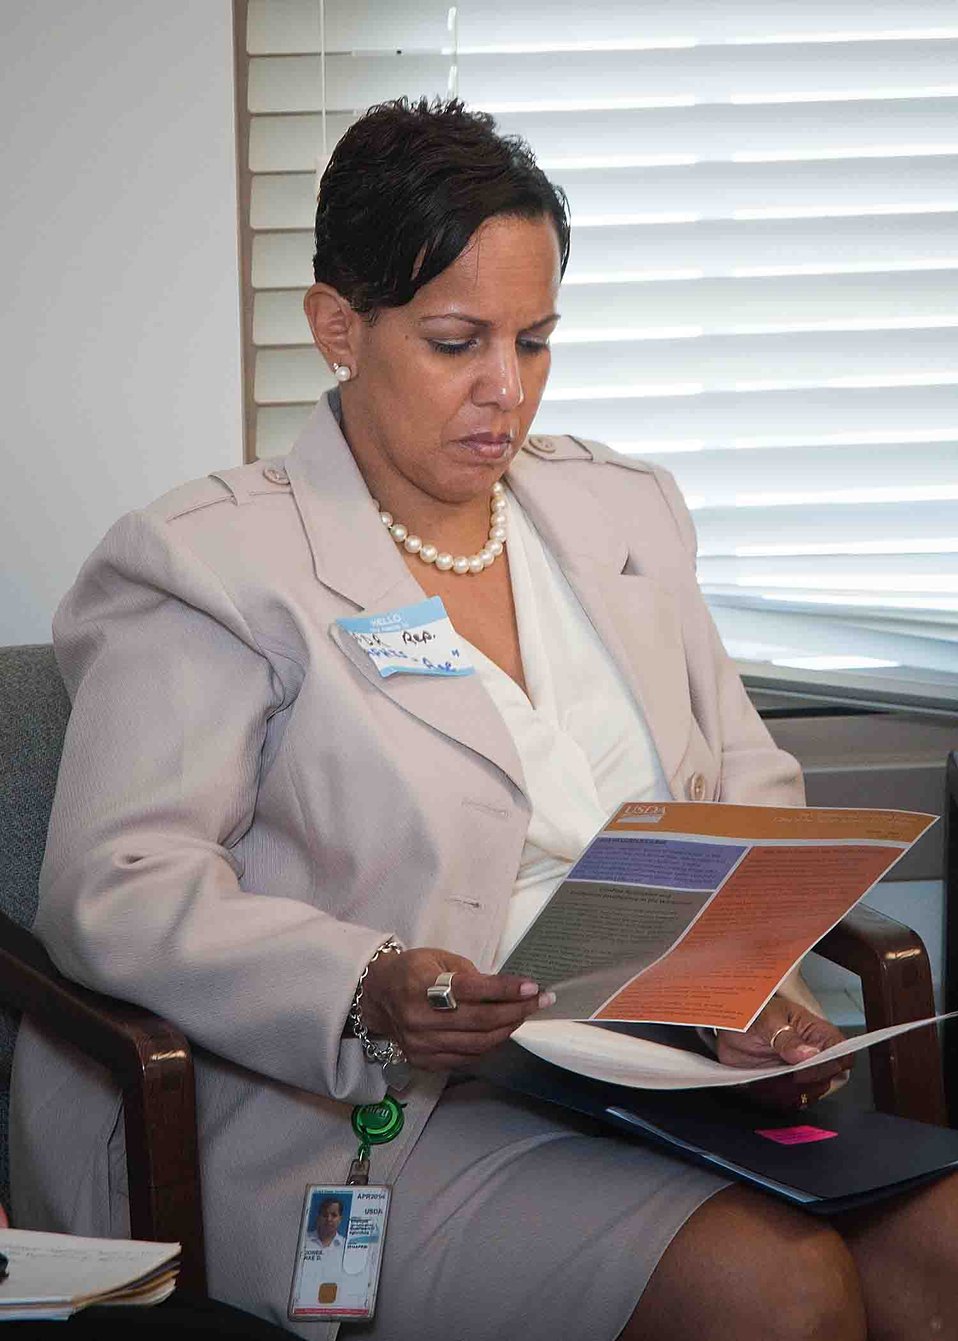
Animal and Plant Health Inspection Service, Alternative Dispute Resolution (ADR) Representative/Mediator Rae Jones reviews a flyer published by the Early Resolution and Conciliation Division, Office of the Assistant Secretary for Civil Rights during an Early Resolution and Conciliation Division open house and training workshop for employees and supervisors at the United States Department of Agriculture (USDA) in Washington, DC, Wednesday, Jun. 15, 2011. The primary goal of the workshop was to strengthen the ADR community through outreach, training and partnership with agencies in USDA and make employees aware of ADR.